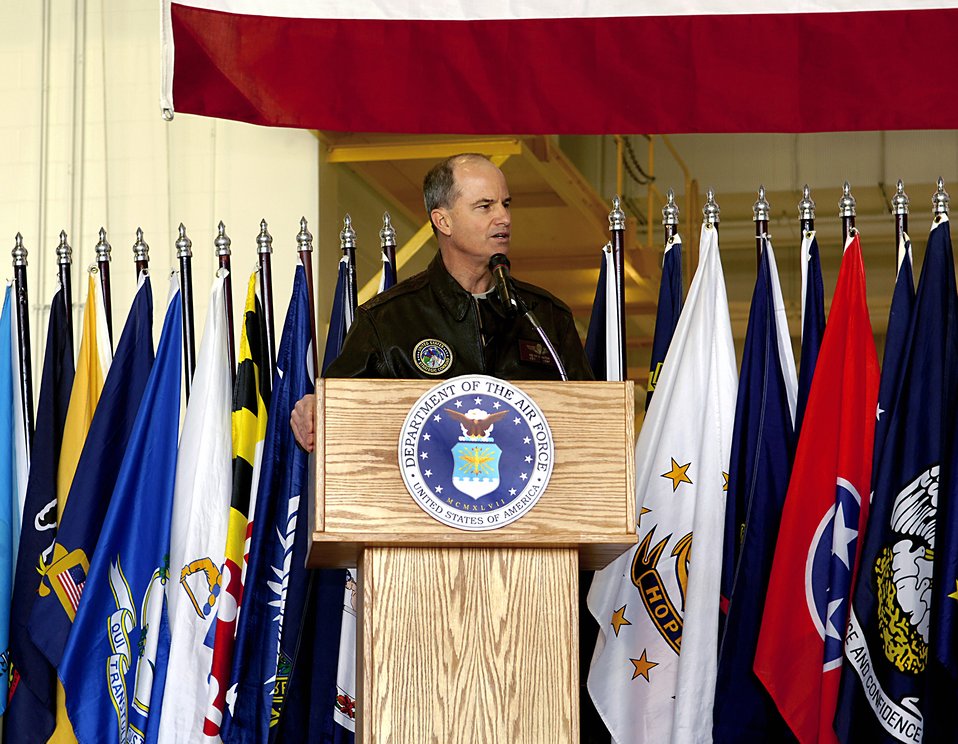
Generals address Minot Airmen

Gen. Kevin P. Chilton addresses more than 1,000 5th Bomb Wing Airman May 2 at Minot Air Force Base, N.D. General Chilton is the U.S. Strategic Command commander.